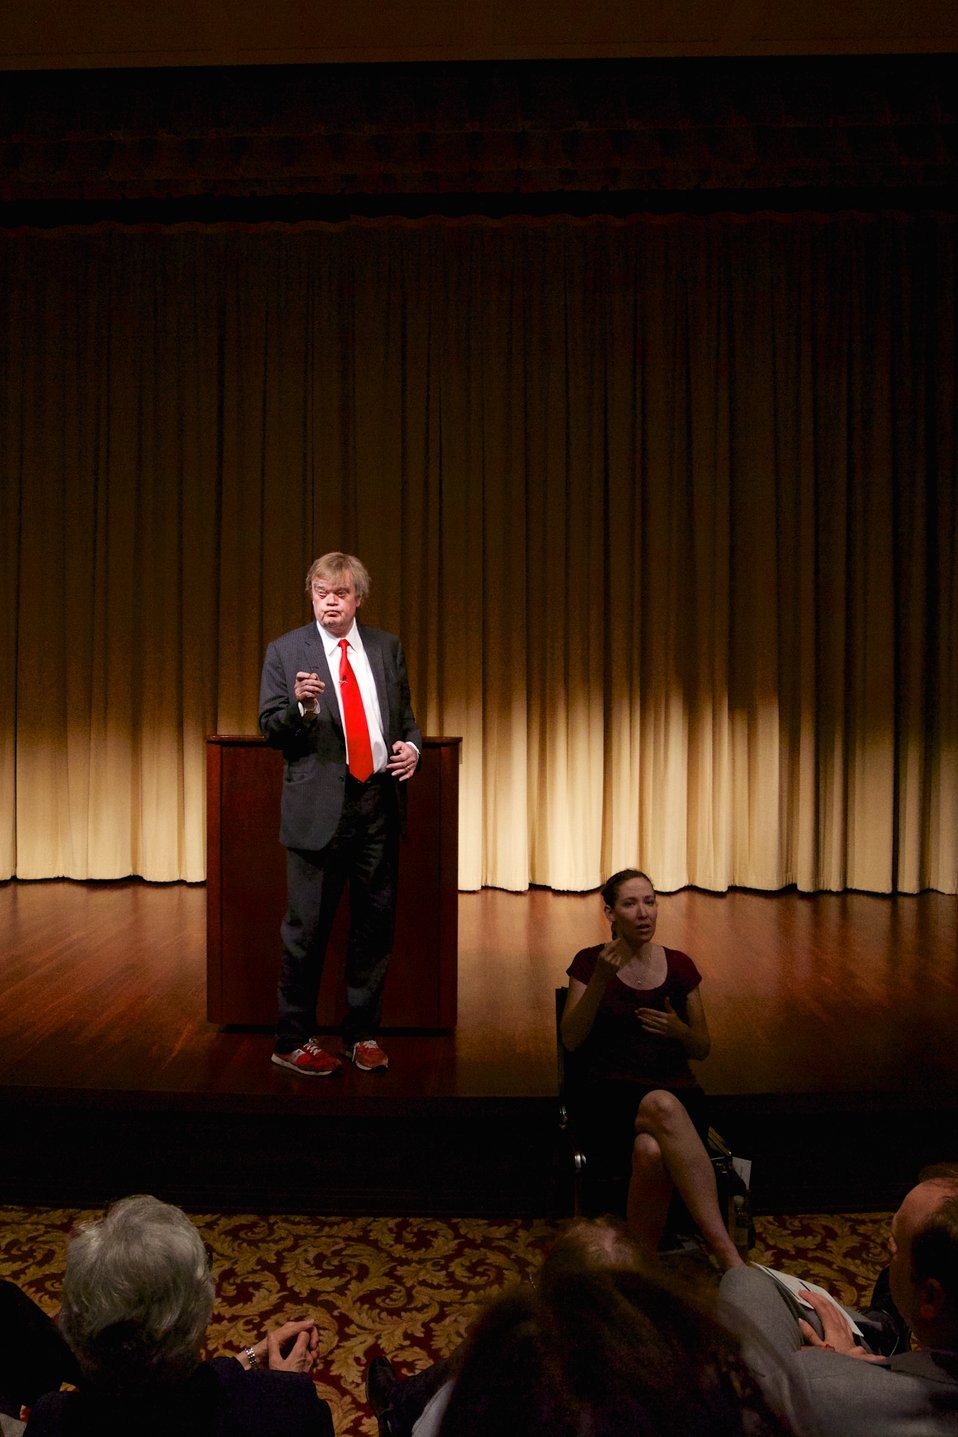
The Keillor Reader